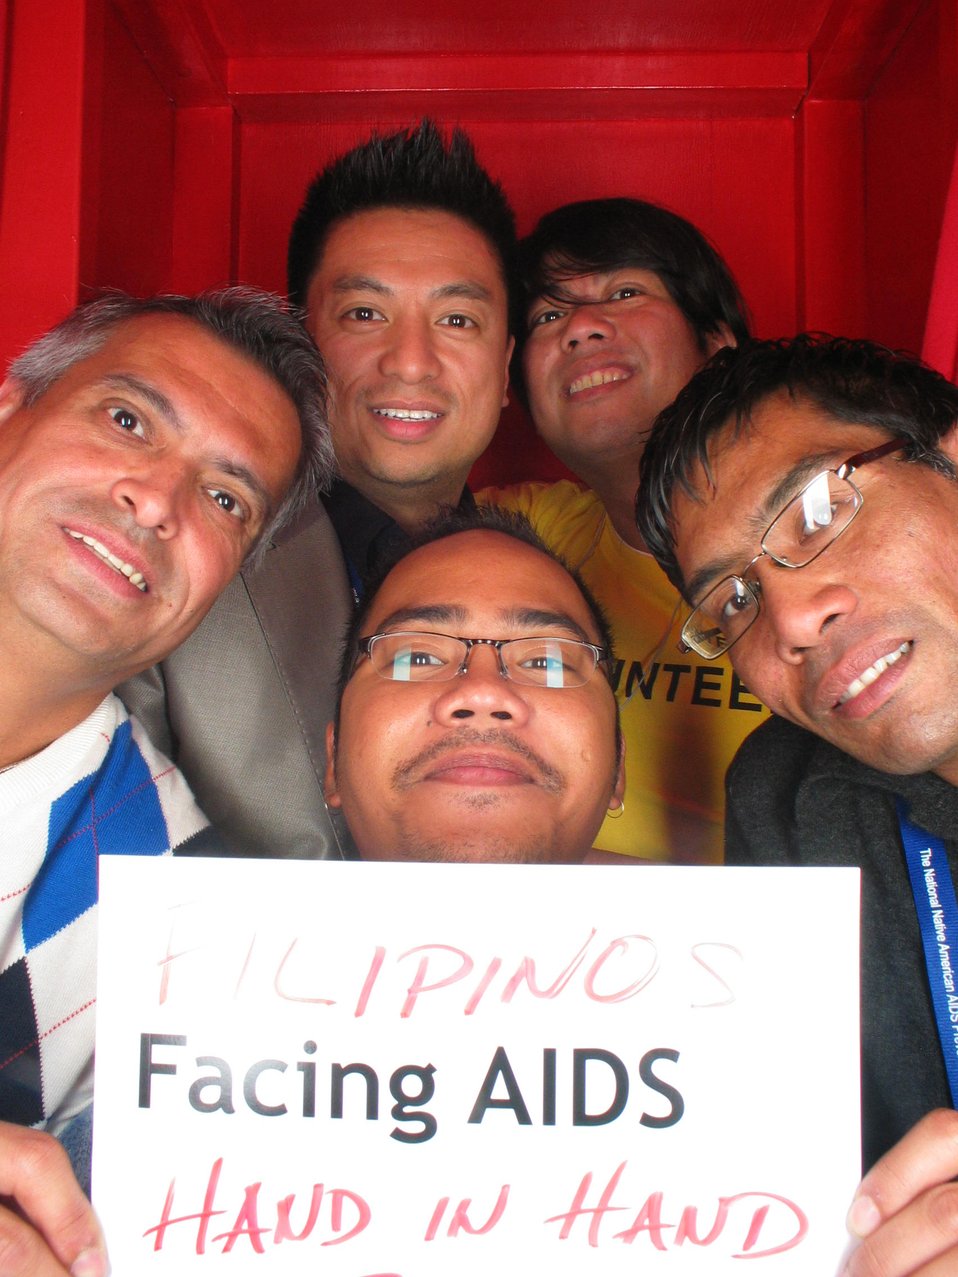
Filipinos Facing AIDS hand in hand.